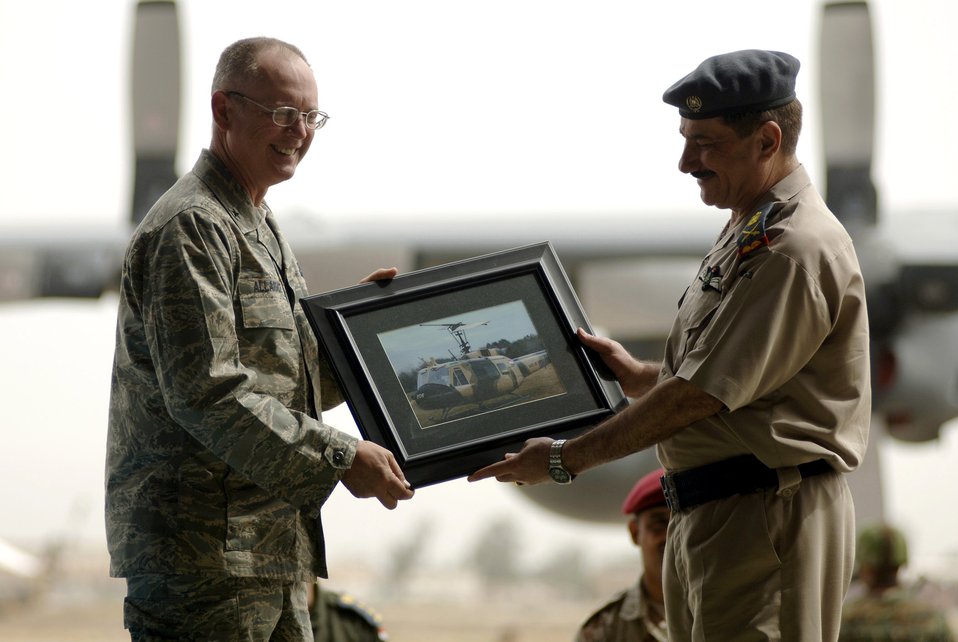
Iraqi air force celebrates 76th anniversary

Brig. Gen. Robert R. Allardice presents Brig. Gen. Abdul Kareem, the New Al Muthana Air Base commander with a gift of appreciation April 22 during the celebration of the 76th anniversary of the Iraqi air force at the New Al Muthana AB in Baghdad, Iraq.